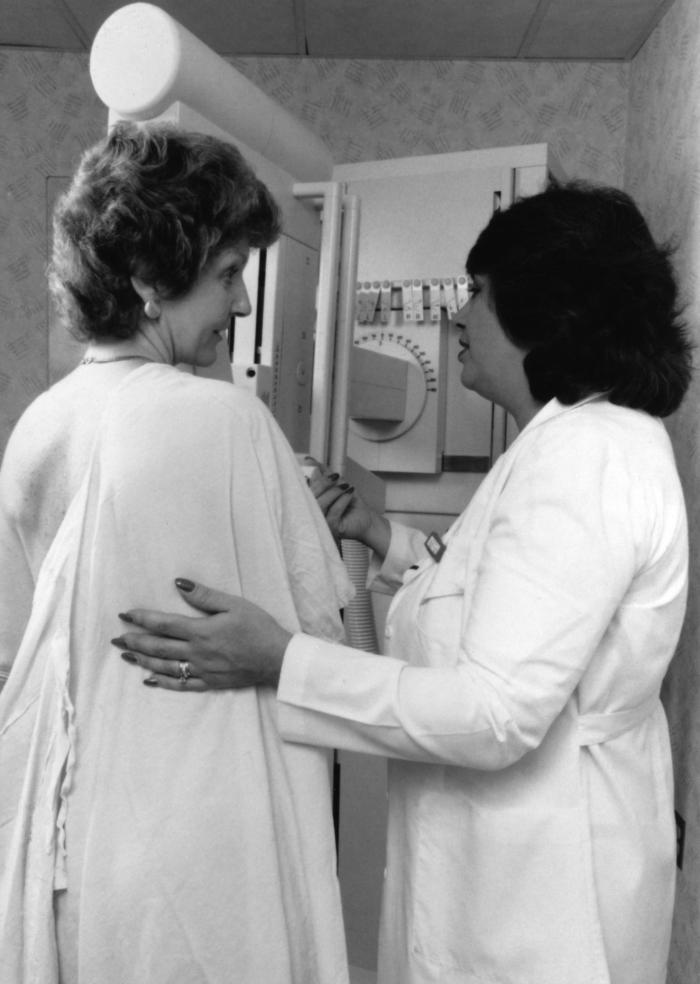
This photograph depicting one of the steps performed in receiving a mammogram was taken for use in a previous public health awareness campaign.